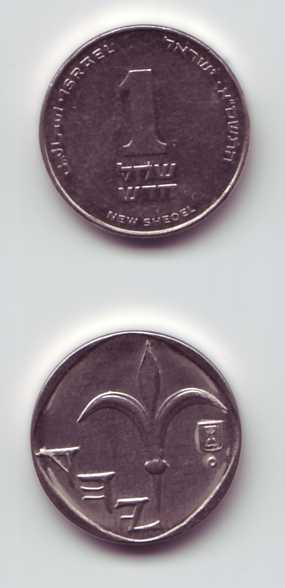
1 NIS coin - התשס'א
Reverse is based on ancient coin, and has Aramaic name of Judea (יהד) in ancient script.